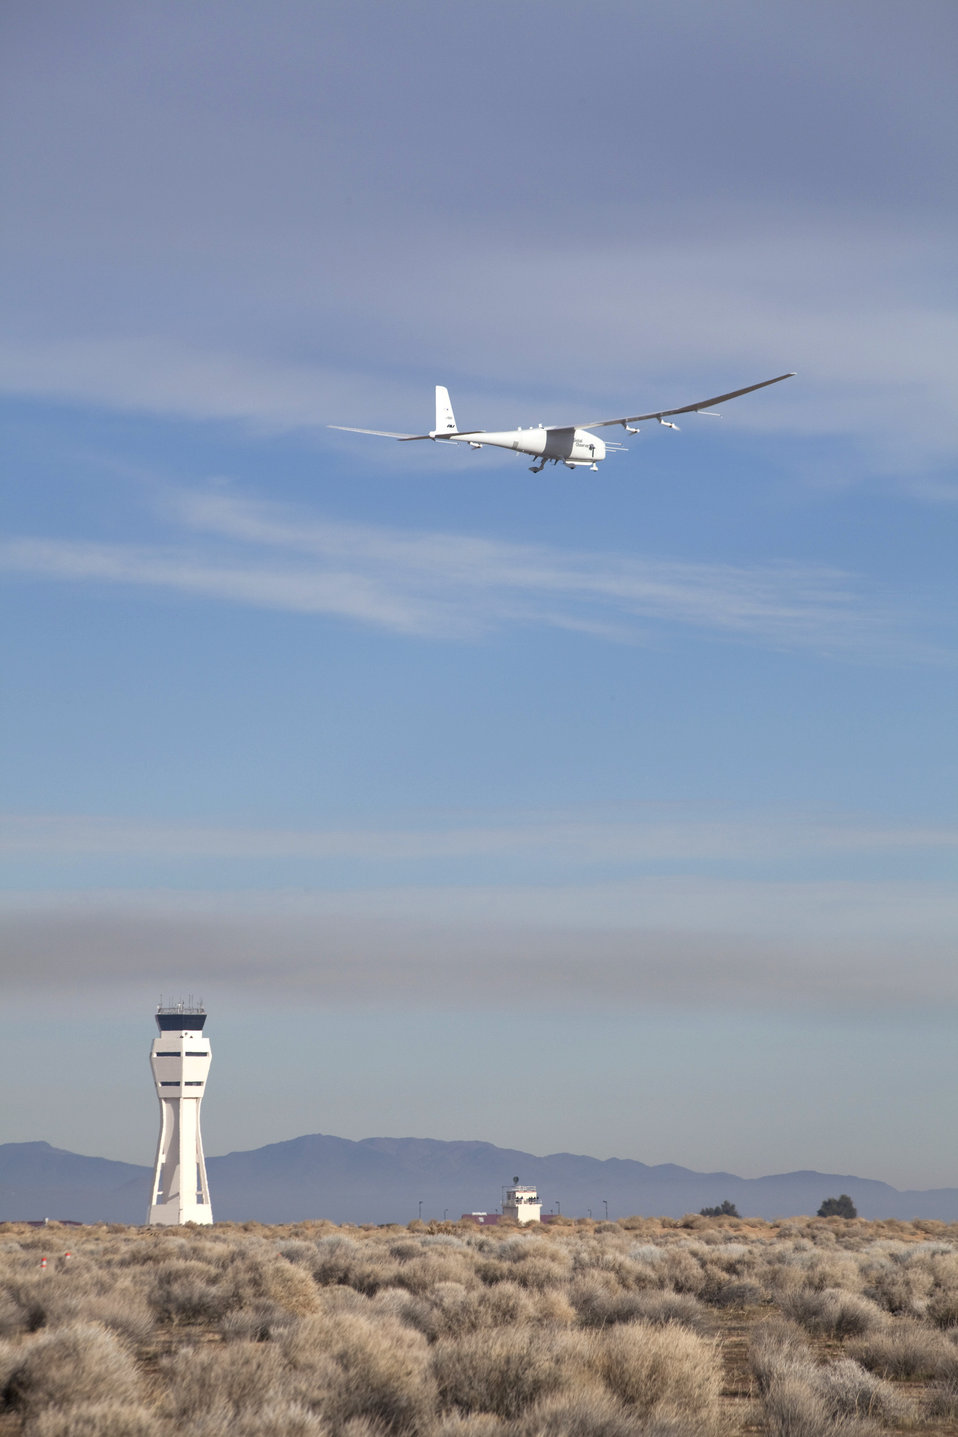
Global Observer

The Global Observer, powered by hydrogen, flies for the first time Jan. 6, 2011, over Edwards Air Force Base, Calif. Officials from the 412th Test Wing's Global Vigilance Combined Test Force will now expand the altitude and duration of flight tests to validate the aircraft's high-altitude and long-endurance potential.